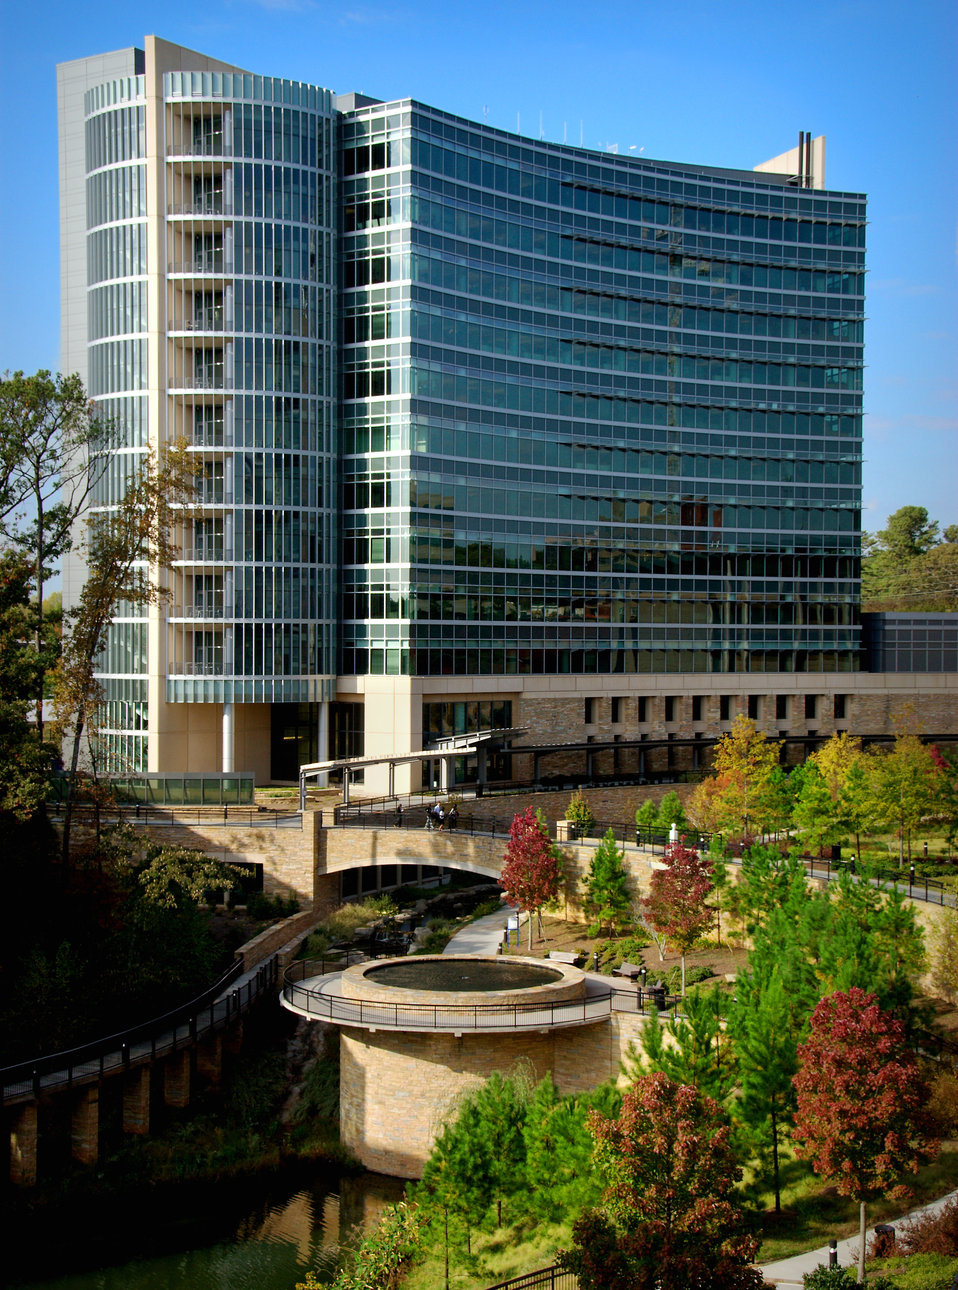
This photograph depicted an exterior view of Building 21, located at the Centers for Disease Control and Prevention, CDC, headquarters, also referred to as the Roybal Campus. This campus is situated in Atlanta, Georgia.